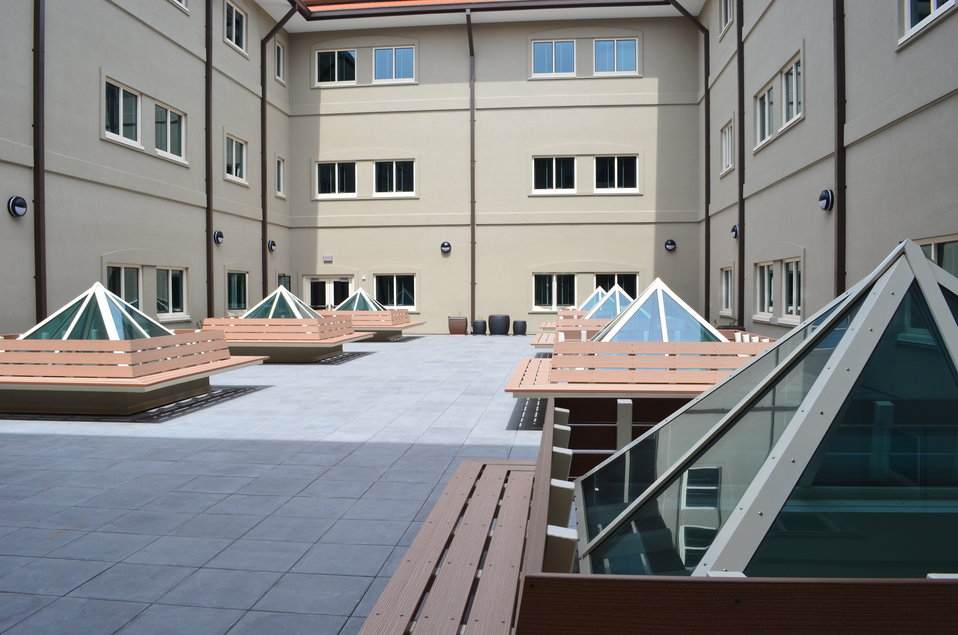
Corps manages vital projects at Presidio

The inner courtyard of the new general instruction building for the Defense Language Institute Foreign Language Center at the Presidio of Monterey in Monterey, Calif., May 8, 2014. The courtyard sits on the roof of the second floor which allows all interior facing rooms to receive sunlight through windows which reduces the use of interior lighting and electricity. The courtyard also features multiple skylights to provide natural lighting to the assembly hall below. All rainwater that lands on the facility is collected in large underground cisterns and will provide non-potable water for toilet-flushing. The institute is one of several major construction projects at the Presidio managed by the U.S. Army Corps of Engineers Sacramento District and is scheduled to be complete August 2014. The program incorporates the latest energy and water conservation technologies in order to operate more efficiently and in a sustainable, environmentally friendly manner.